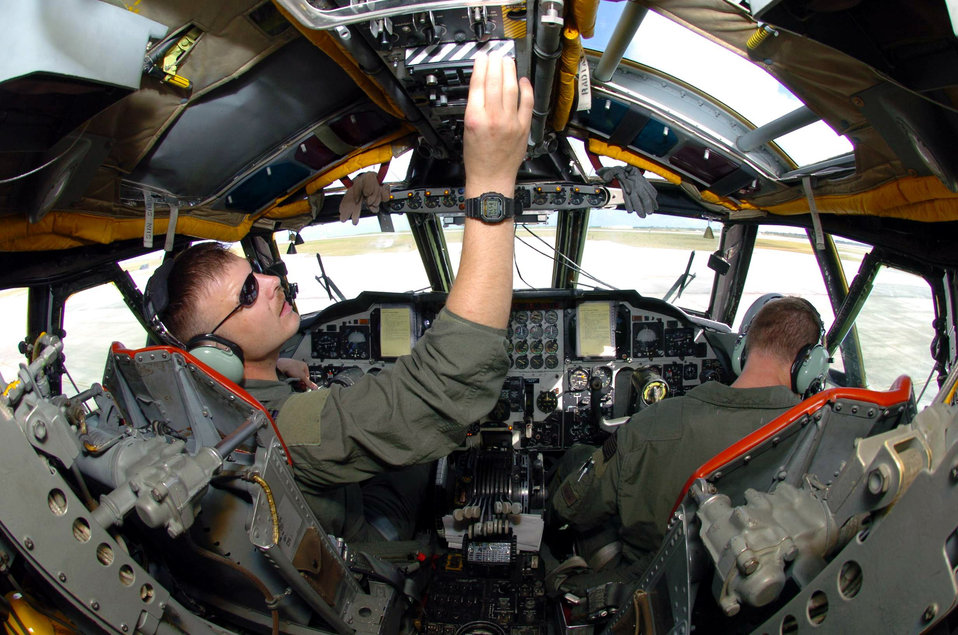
Checkin' it out

ANDERSEN AIR FORCE BASE, Guam -- Capt. Jeremiah Baldwin (left), a pilot, and 1st Lt Bentley Brooks, a co-pilot, conduct a preflight check in their B-52 Stratofortress here. Six B-52s and about 300 support people from Minot Air Force Base, N.D., are the first to deploy here following the decision to station a rotating bomber force here. Both Airmen are from the 23rd Bomb Squadron at Minot AFB.